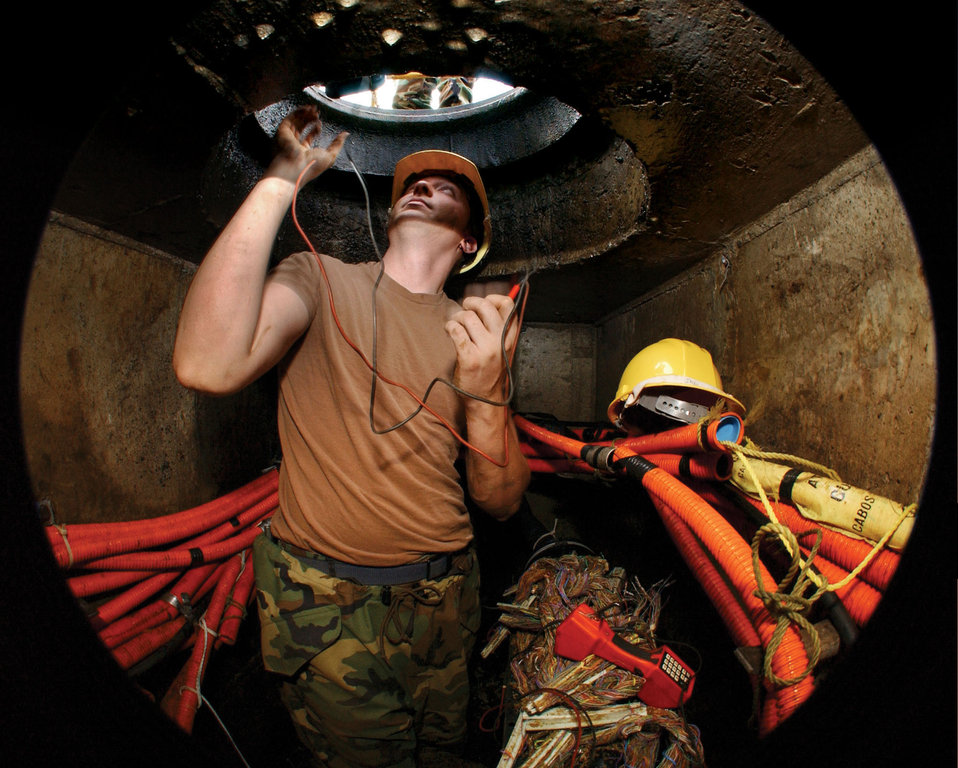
Man down under

LAJES FIELD, Azores -- From down under, Senior Airman James Cummings, a cable and antenna maintenance technician with the 65th Communications Squadron here, tests telephone cable lines.